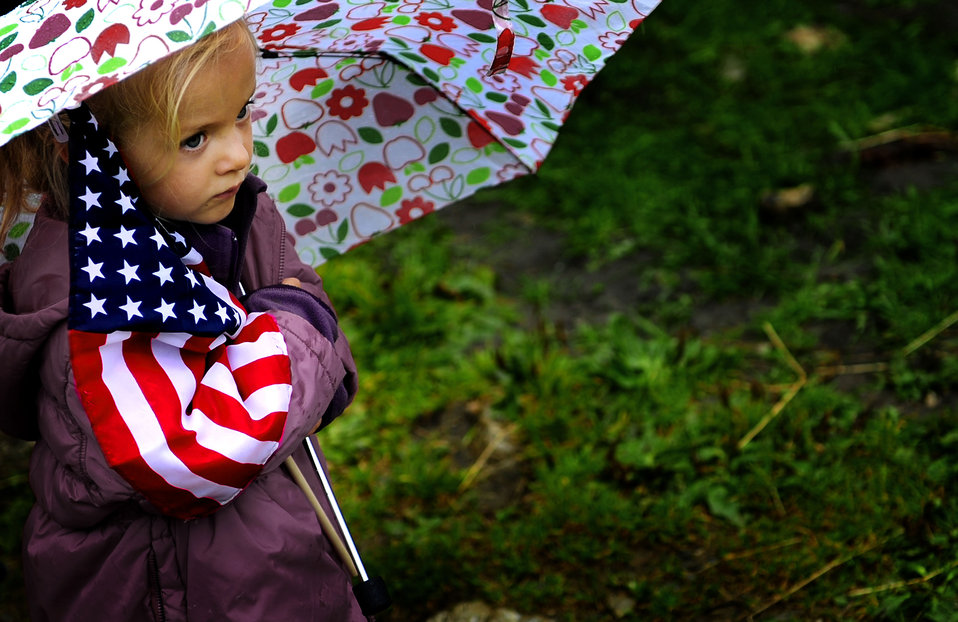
Always remember

Meije Blond watches a B-17 Flying Fortress commemoration ceremony Sept. 4, 2011, in Bourg-Saint-Maurice, France. The ceremony honored an eight-man B-17 crew that was lost after their aircraft went down in the French Alps during World War II.